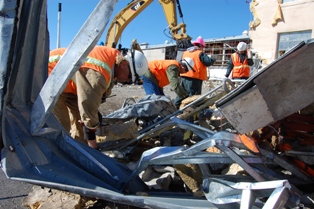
‘Chem Plant’ Decontamination and Decommissioning Advances at Idaho Site

Radiological control technicians survey a pile of debris at CPP-630, a facility at the Idaho Nuclear Technology and Engineering Center.